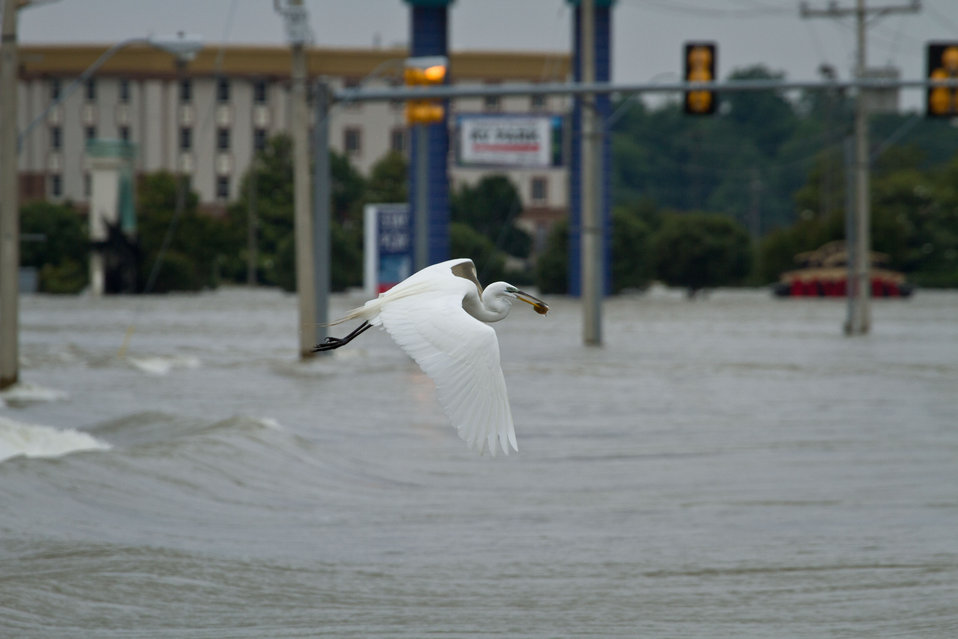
A bird picks up a fish from Mississippi River floods waters flowing over roadways and inundate casinos and the farms that surround them in Tunica, MS on Sunday, May 15. 2011.